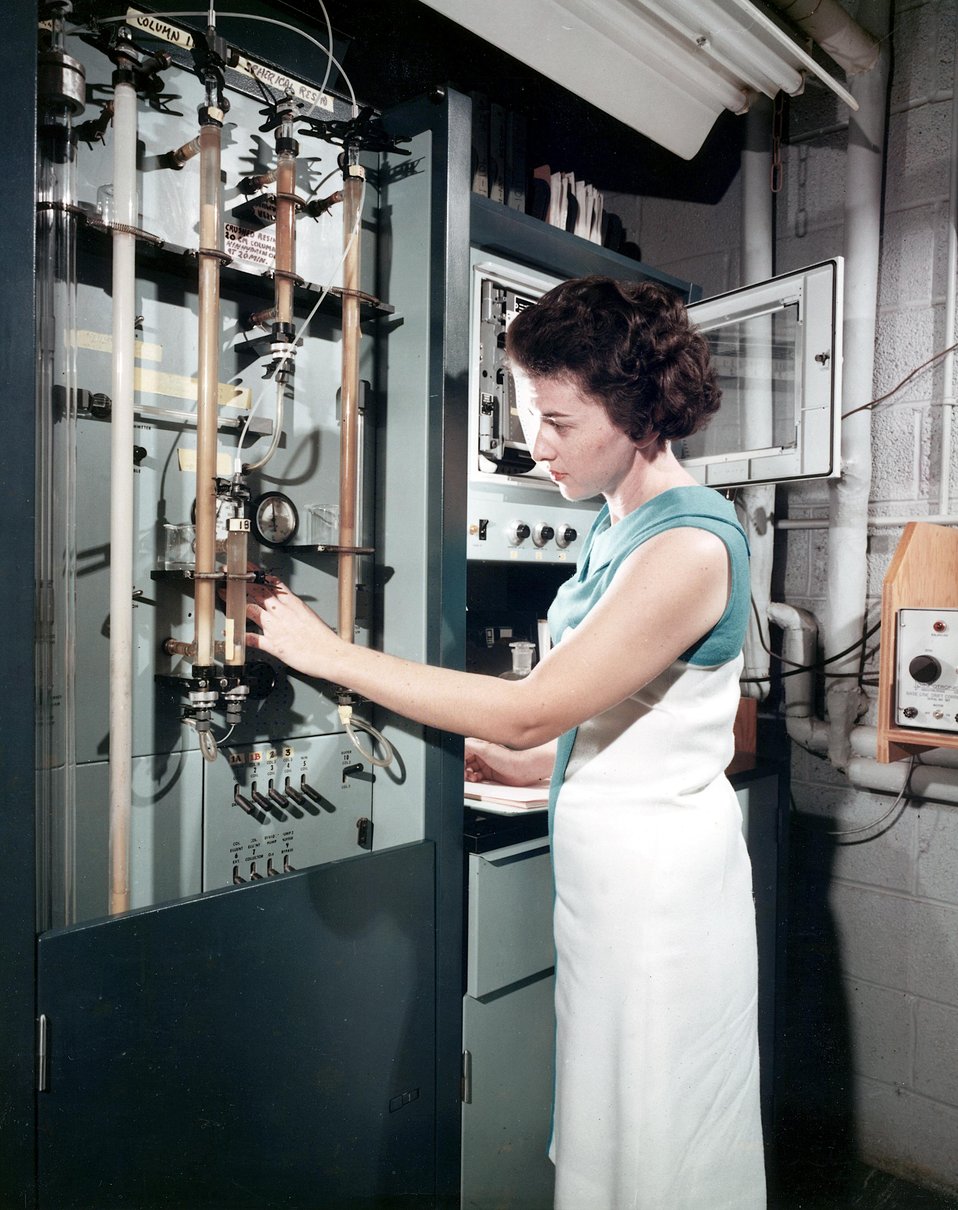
This automatic amino acid analyzer is an indispensable tool in protein research since it gives the amount of each amino acid present in a given protein within a reasonable time. c. 1966